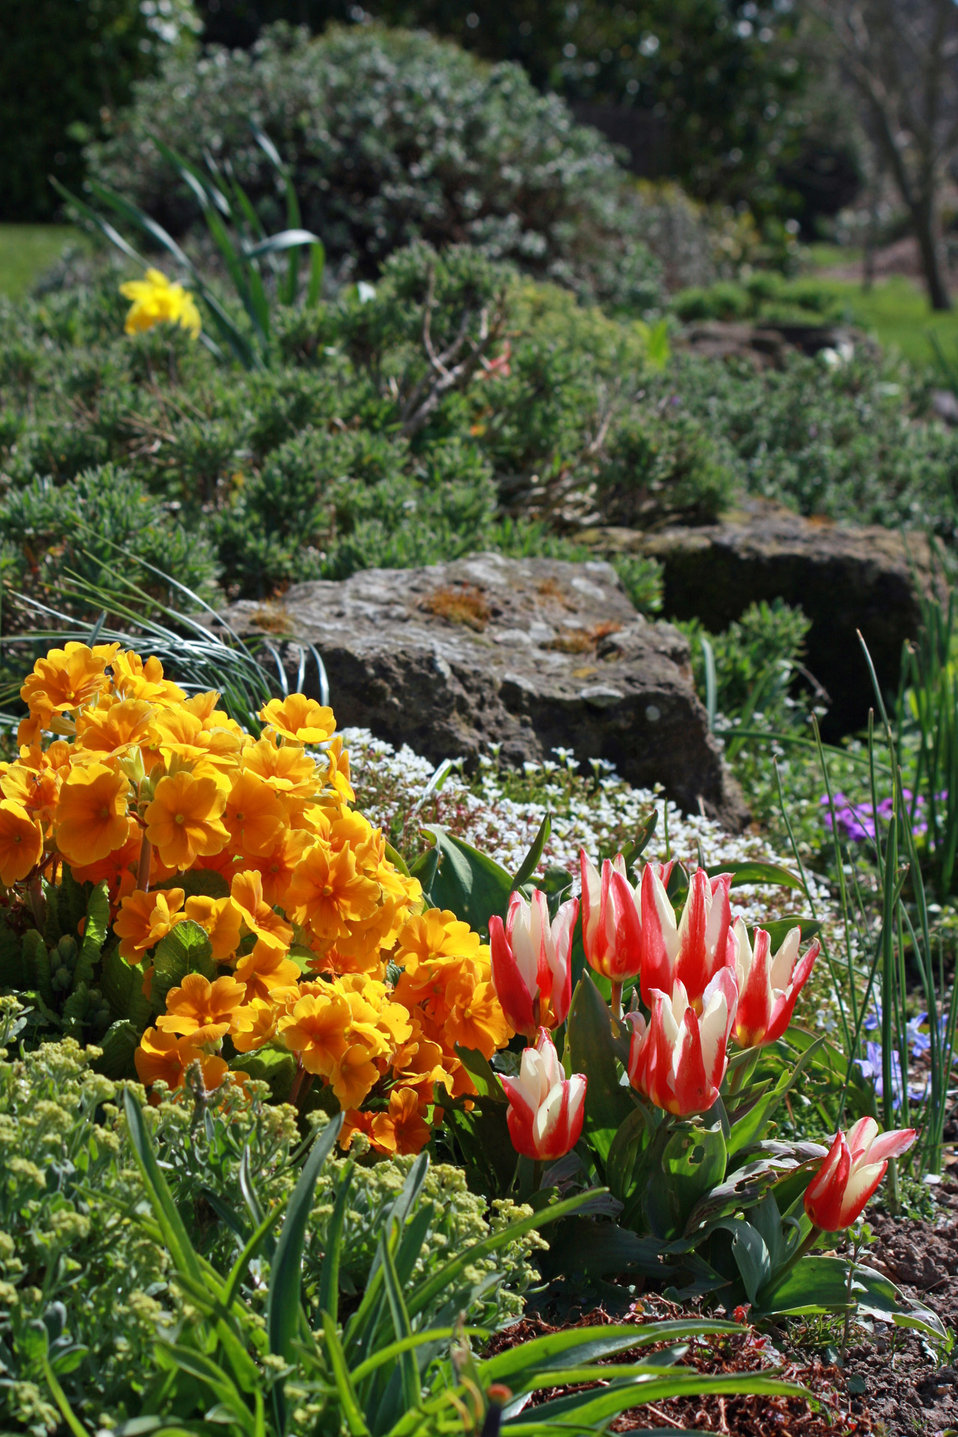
Flowers in rockery garden

Pretty red and orange flowers in the rockery garden.